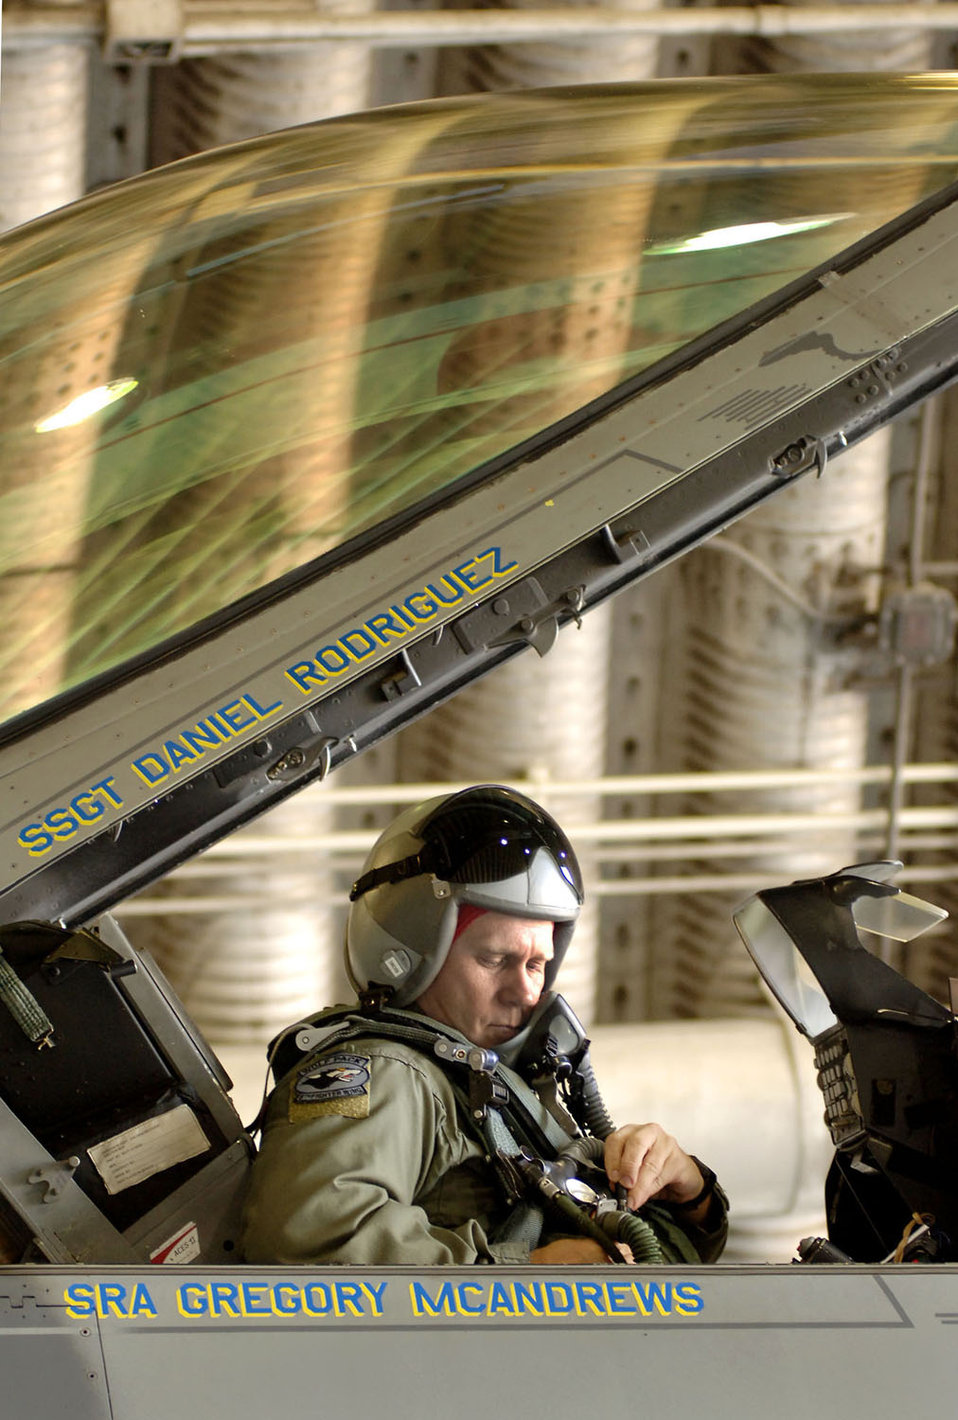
Kunsan Air Base maintains readiness

Colonel Jeffrey Lofgren, 8th Fighter Wing commander, secures his gear and straps into an F-16 Fighting Falcon at Kunsan Air Base, South Korea.